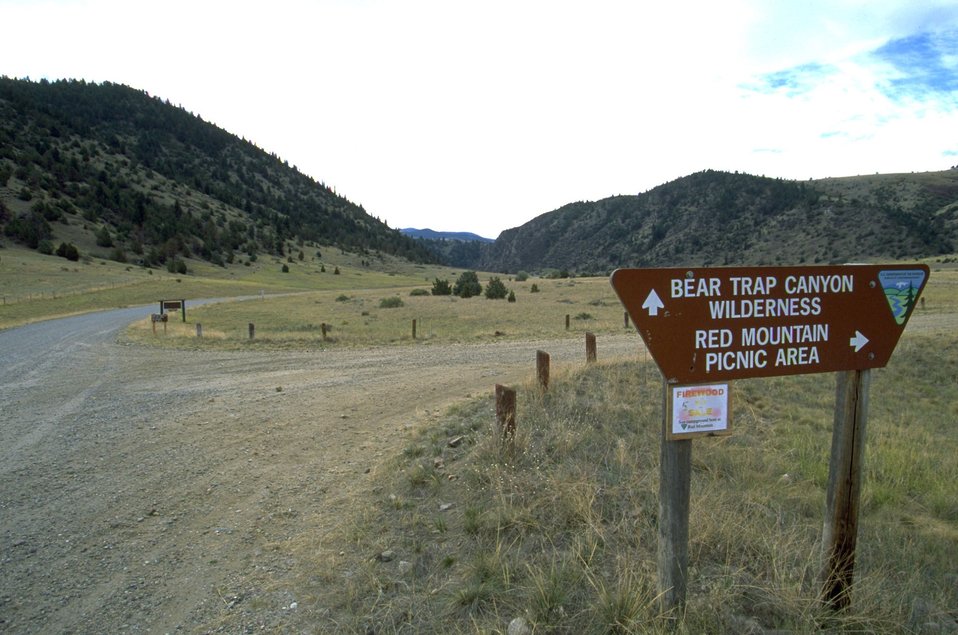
Information Sign at Red Mountain Campground